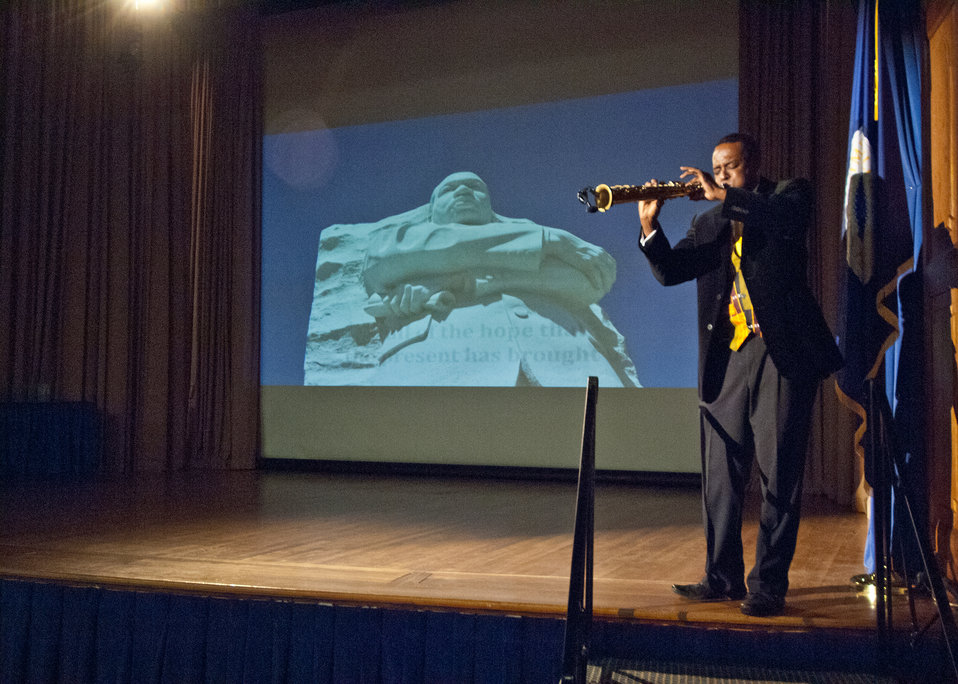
J. Plunky Branch of the Afro-Funk Jazz Group, “Plunky and Oneness” performs a saxophone solo of The Negro National Anthem at the National Service Day and Martin Luther King Celebration in honor of Dr. Martin Luther King Jr.’s contributions to the Civil Rights Movement at the United States Department of Agriculture in Washington, D.C., on Thursday, January 12, 2012.